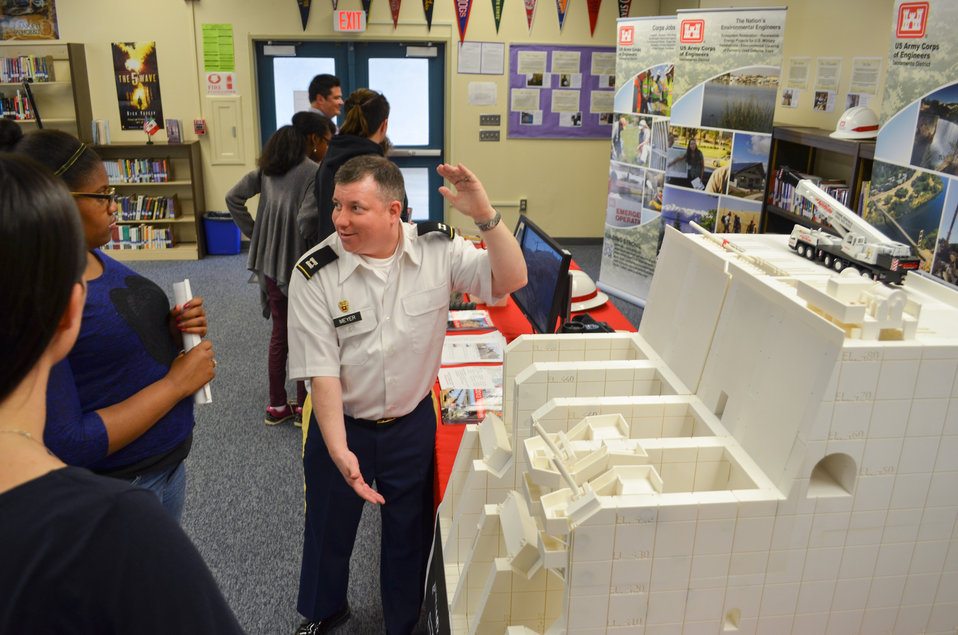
Capt. Meyer explains Folsom Dam's new auxiliary spillway dimensions

Captain Michael Meyer with the U.S. Army Corps of Engineers Sacramento District explains the dimensions of the Folsom Dam's new auxiliary spillway during Science Day at Kit Carson Middle School, in Sacramento Calif., April 8, 2014. Representatives from the Corps and Granite Construction interacted with around 140 seventh and eighth graders in an effort to get students interested in science, technology, engineering and math related fields.